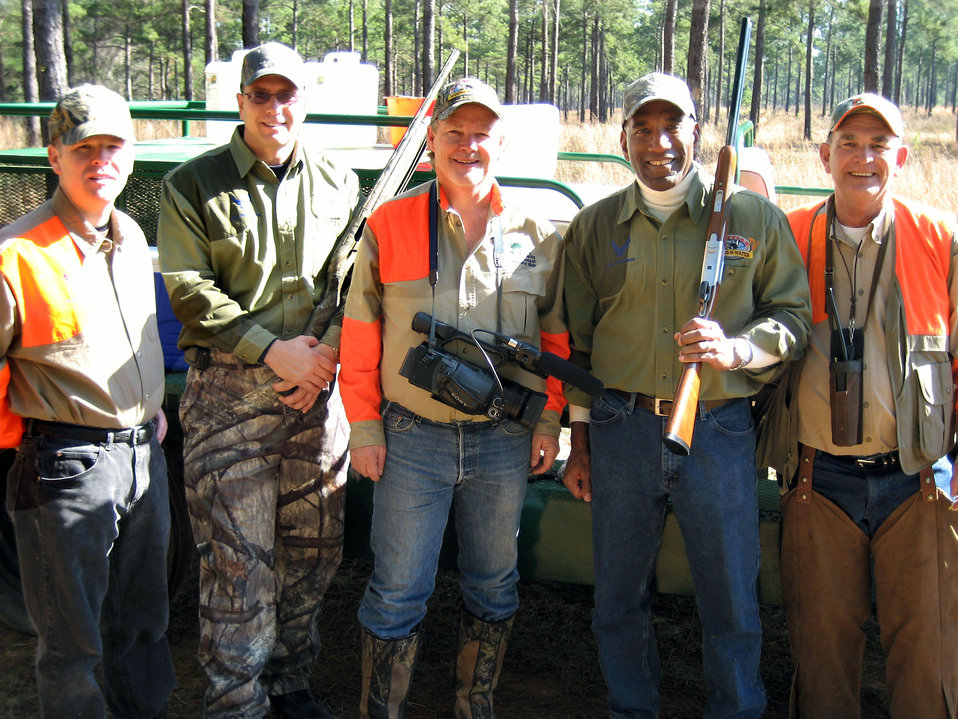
Air Force presents top civic award to outdoor TV show

From left, Lt. Col. Richard Van Hook, Tech. Sgt. Thad Smith, Dennis Lewis, Brig. Gen. A.J. Stewart and guide Benny Taylor prepare to go hunting Jan. 22 in Georgia. Air Force Recruiting Service presented the American Spirit Award, the service's top civic award, to program host Mr. Lewis and Southern Woods-N-Water TV during a ceremony in Perry, Ga., Jan. 21. General Stewart is the commander for AFRS. Colonel Van Hook and Sergeant Smith are assigned to the 336th Recruiting Squadron.